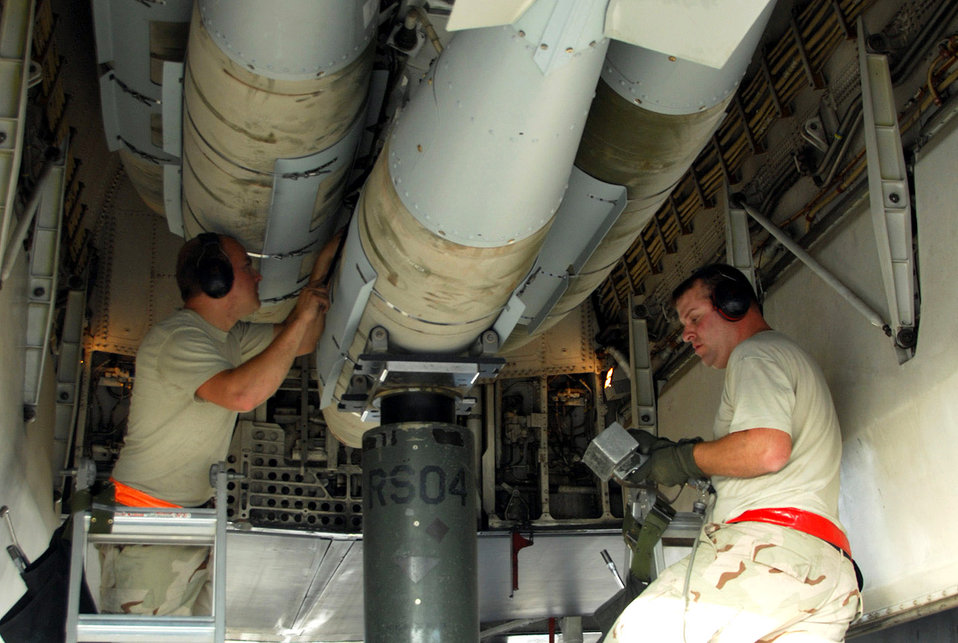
Having a bomb

Staff Sgt. Brandon Neitz (left) and Tech. Sgt. James Sheldon load 2,000 pound bombs on a B-1B Lancer to prepare it for a mission Dec. 21 at a Southwest Asia air base. Both sergeants are assigned to the 379th Expeditionary Maintenance Squadron and deployed from Dyess Air Force Base, Texas.